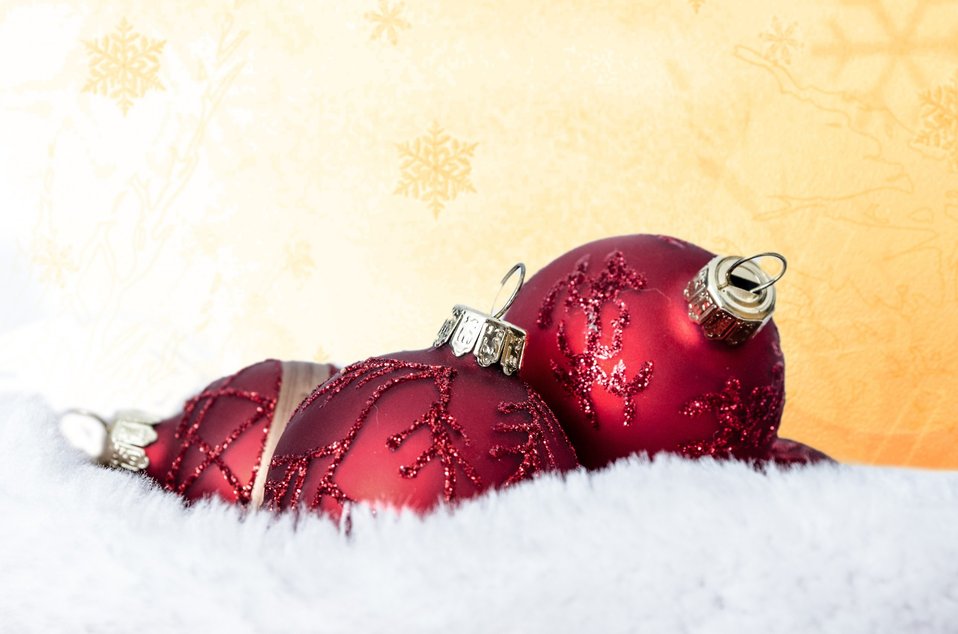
Christmas decorations.